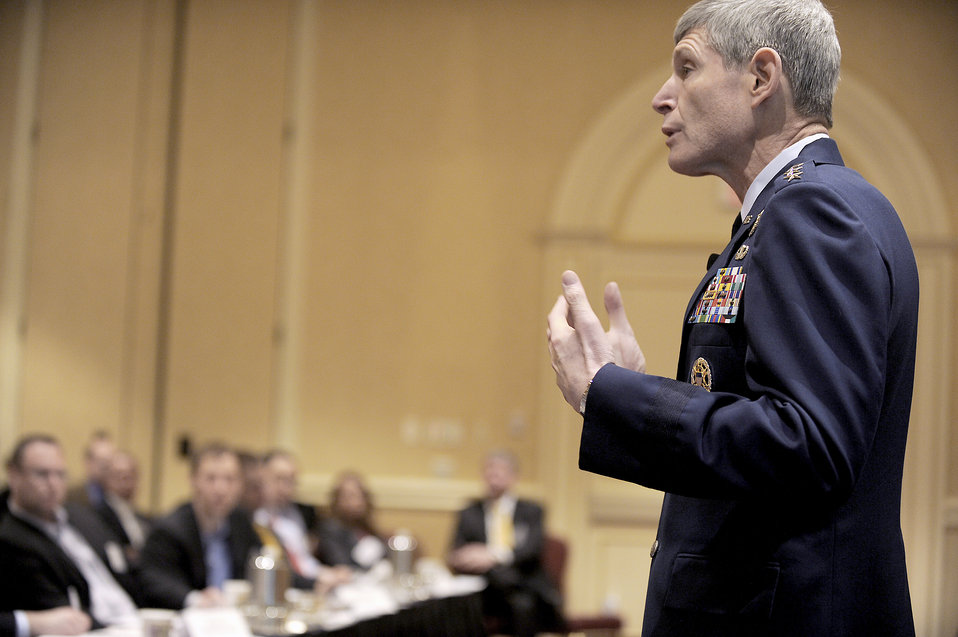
Defense Programs Conference

Air Force Chief of Staff Gen. Norton Schwartz speaks to attendees at the 2011 Defense Programs Conference in Arlington, Va., on March 2, 2011. In his remarks, General Schwartz said maintaining U.S. defense capabilities requires cooperation between the private sector and the military.